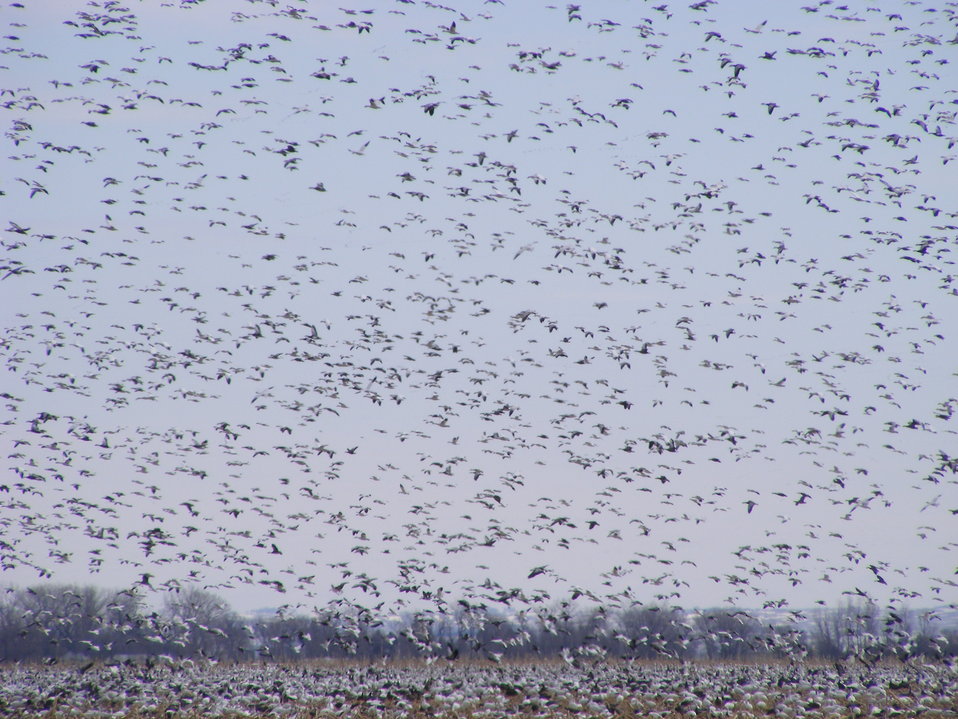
An Amazing Spectacle

Snow goose migration can be amazing in northeast South Dakota. The noise and constant movement of these flocks is a phenomenon that shouldn't be missed.